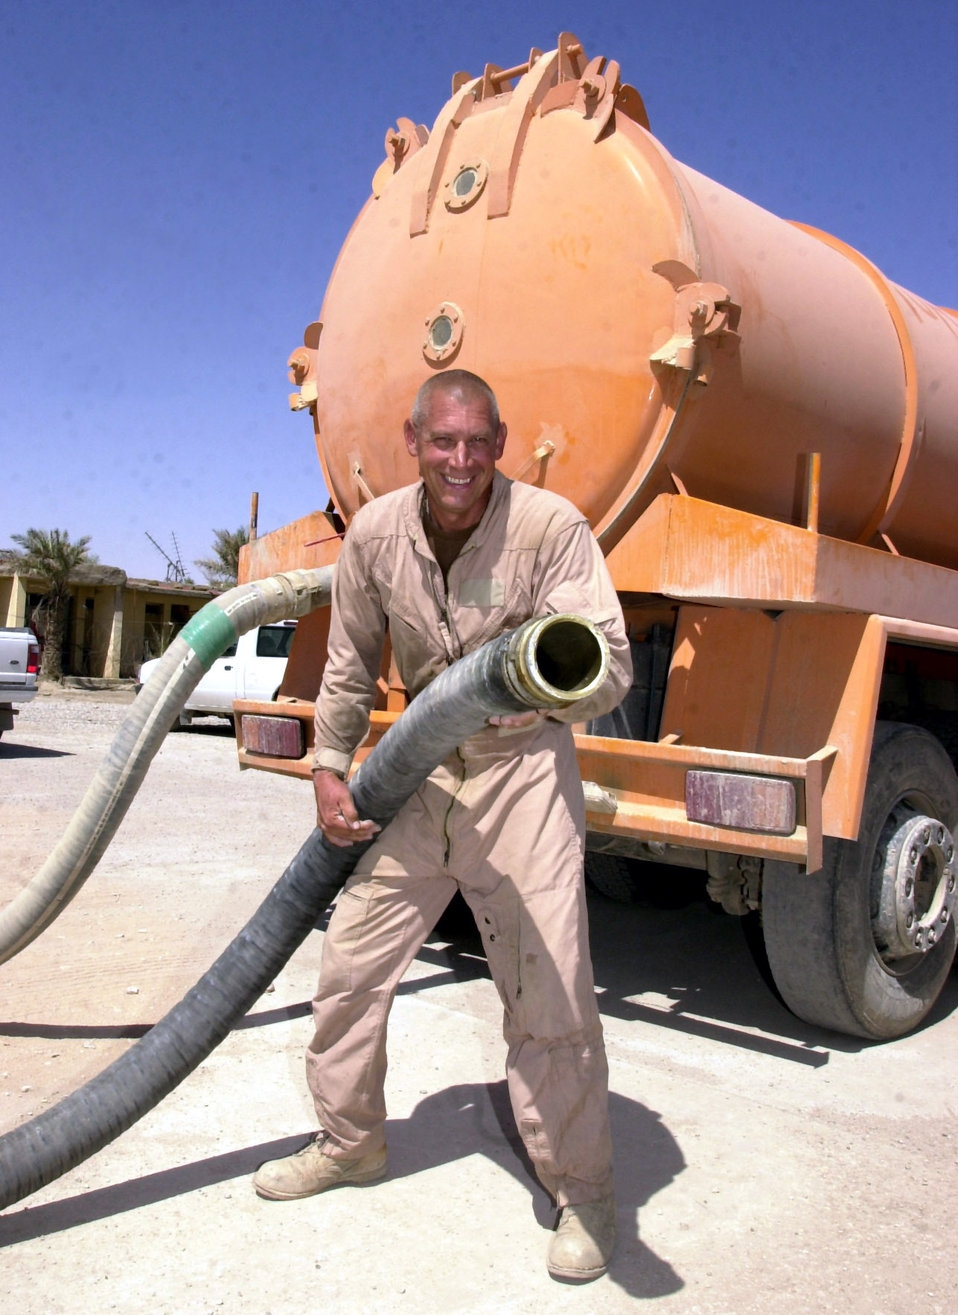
Reservist

TALLIL AIR BASE, Iraq -- Tech. Sgt. Randall Lovett prepares to service one of more than 100 portable toilets here. The reservist is assigned to the base's 407th Expeditionary Civil Engineer Squadron.